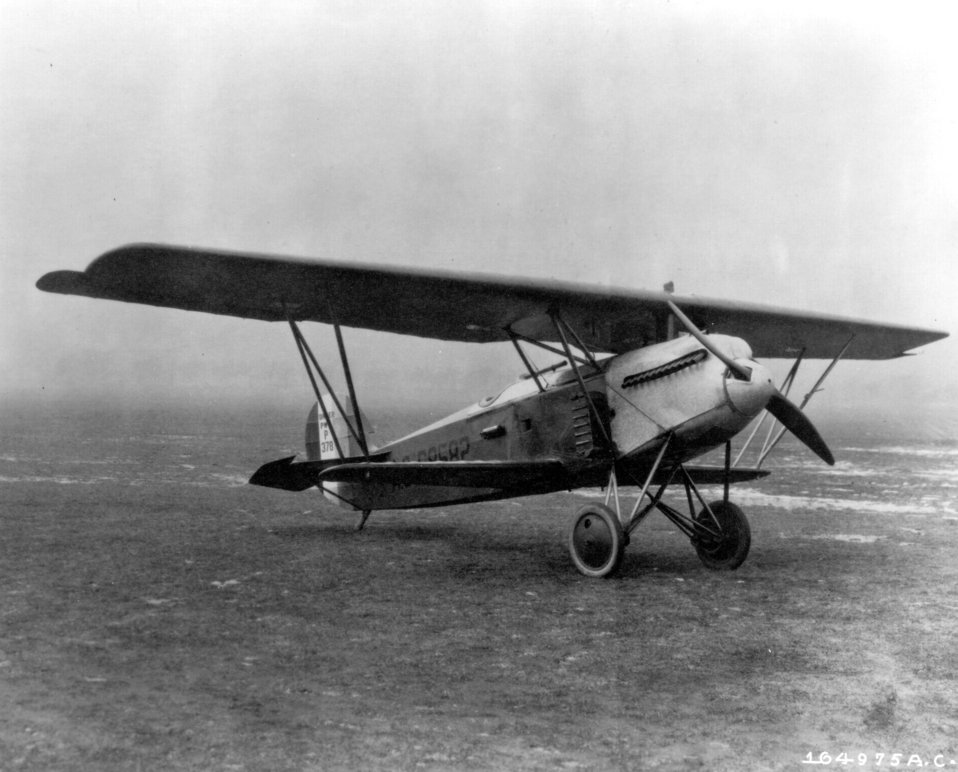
PW-7

EARLY YEARS -- PW-7